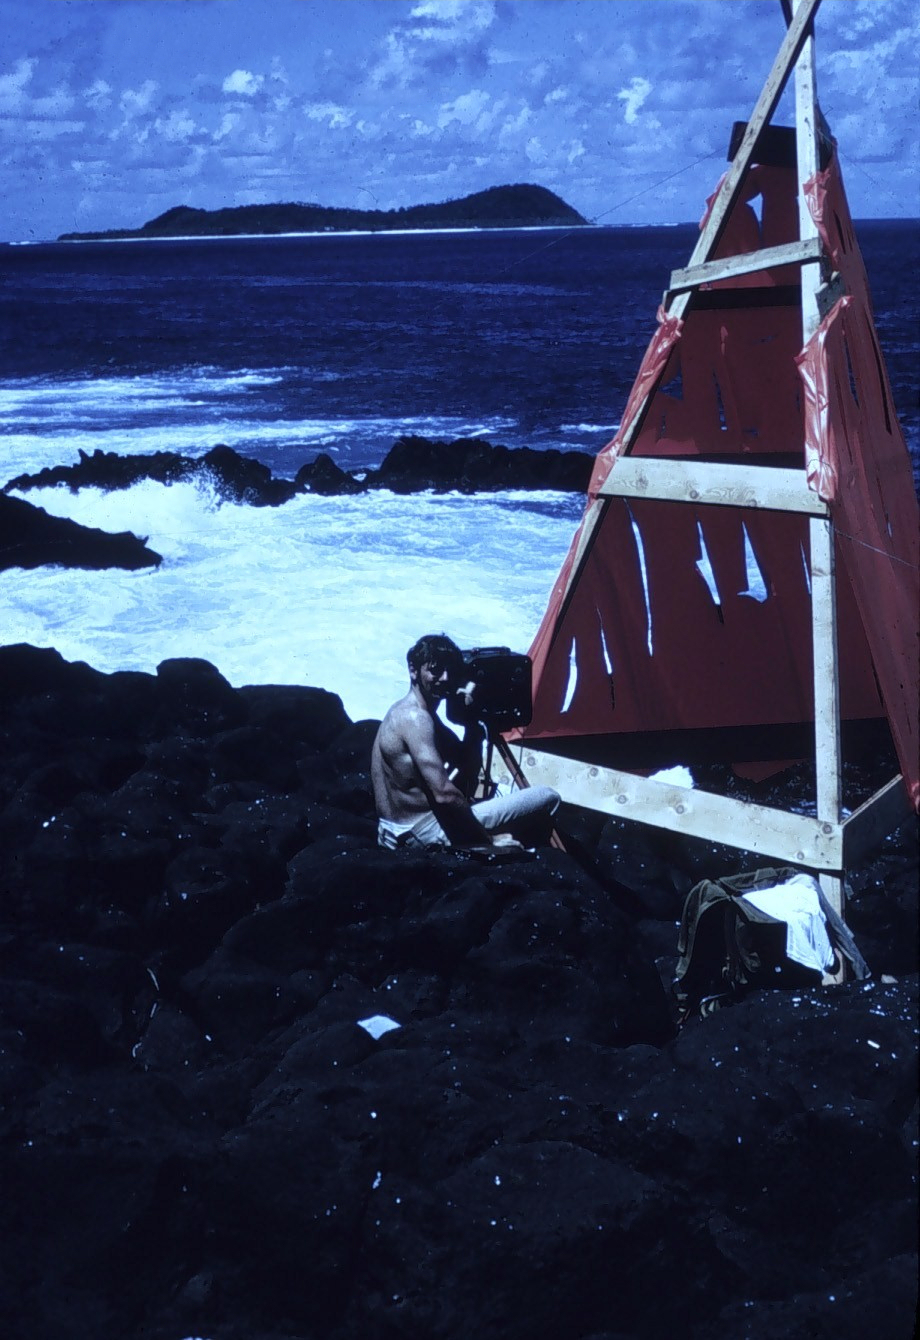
Lester B. Smith making Tellurometer observations. Off of SURVEYOR